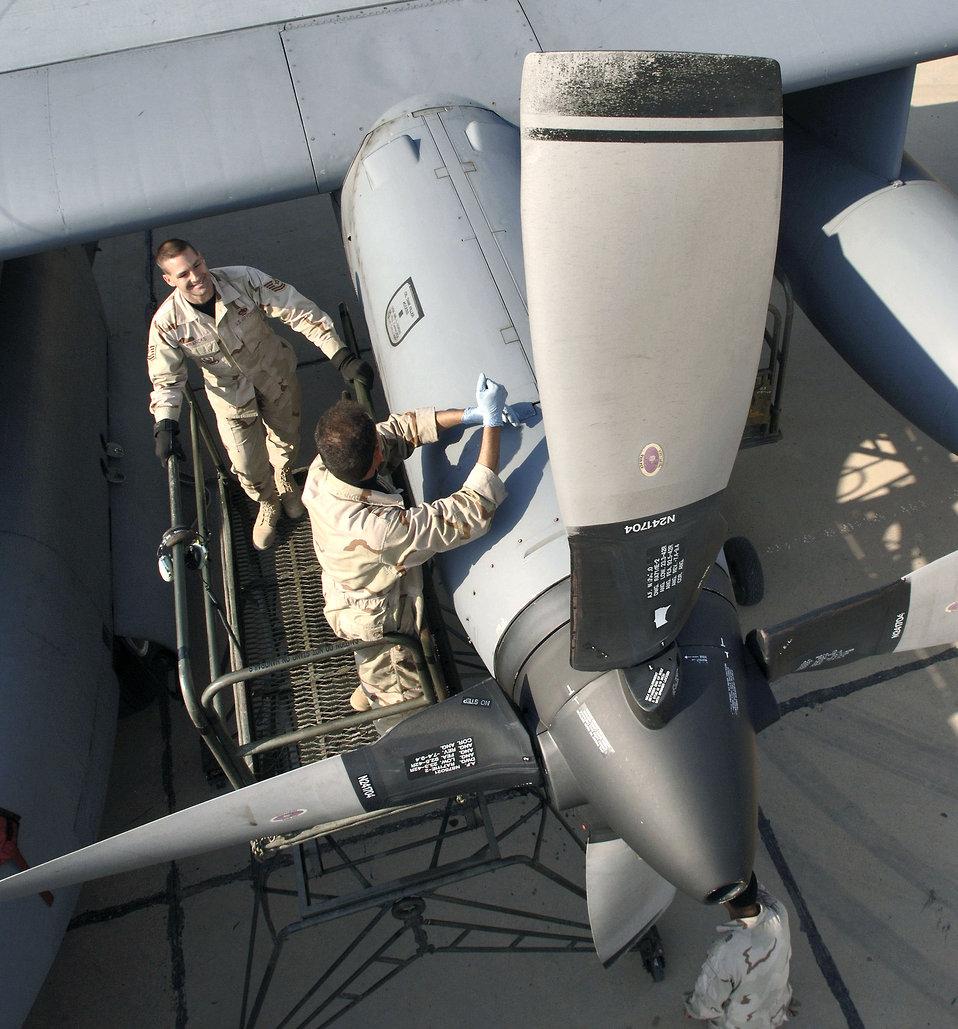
Iraqi Air Force spreads its wings

Tech. Sgt. Charles Franks observes and instructs an Iraqi crew chief performing an inspection on the propeller of an Iraqi C-130E Hercules cargo aircraft at New Al Muthana Air Base, Iraq, Wednesday, Feb. 22, 2006. Sergeant Franks is part of the Multinational Security Transition Command-Iraq, Coalition Air Force Transition Team. The Iraqi trainee is with the 23rd Squadron.